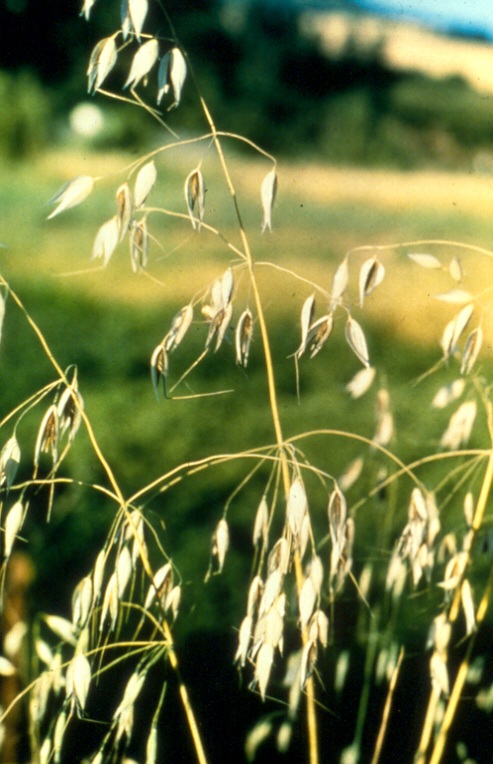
Wild Oats Salmon FIeld Office UCSC Upper Columbia Salmon Clearwater District